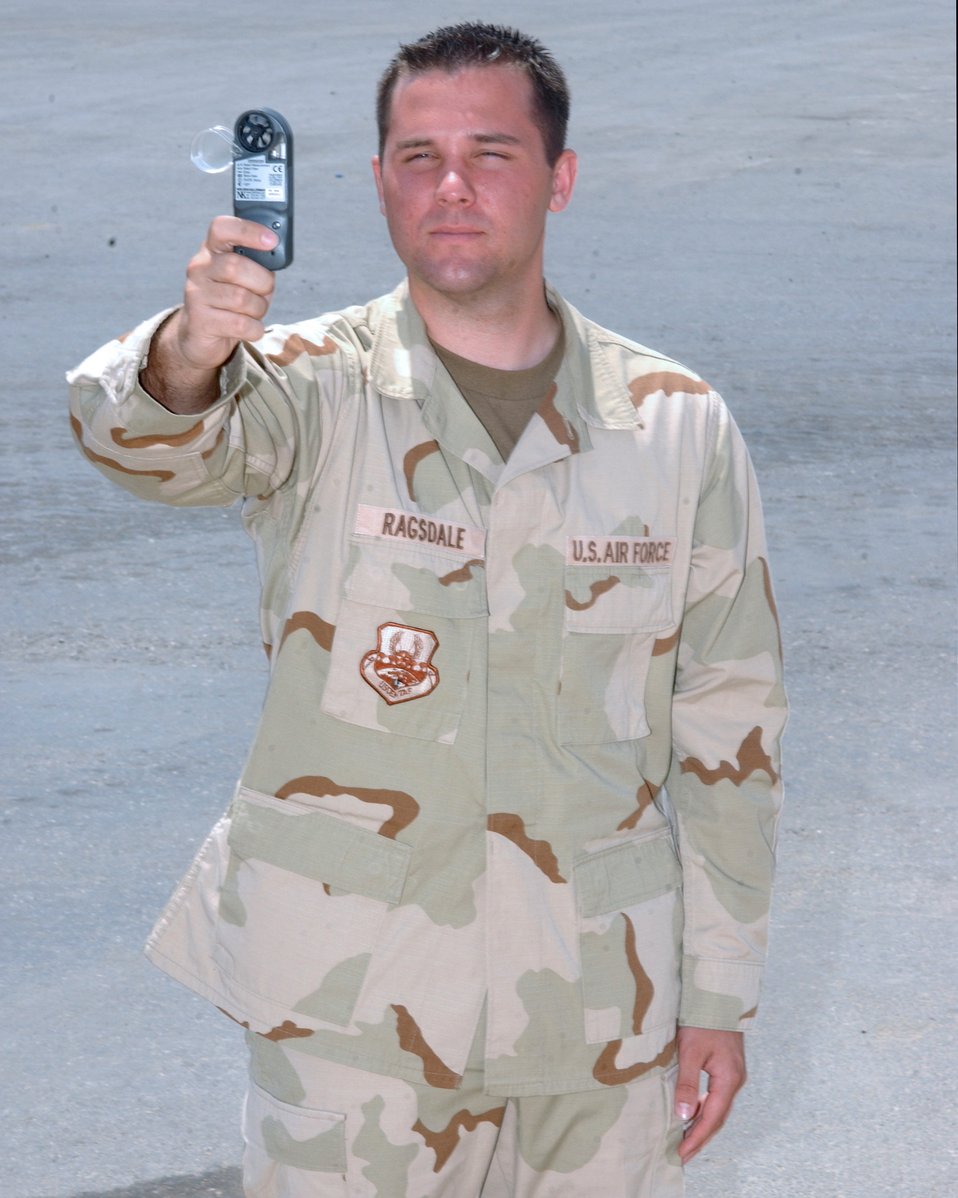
Deployed weather observers report more than the obvious

SOUTHWEST ASIA -- Senior Airman Michael Ragsdale demonstrates a portable backup method of obtaining weather readings. Since weather is vital in flying operations, the weather observers let people know that it is more than just hot, humid and dusty. Airman Ragsdale is a weather observer with the 380th Expeditionary Operations Support Squadron at a forward-deployed location and is from MacDill Air Force Base, Fla.